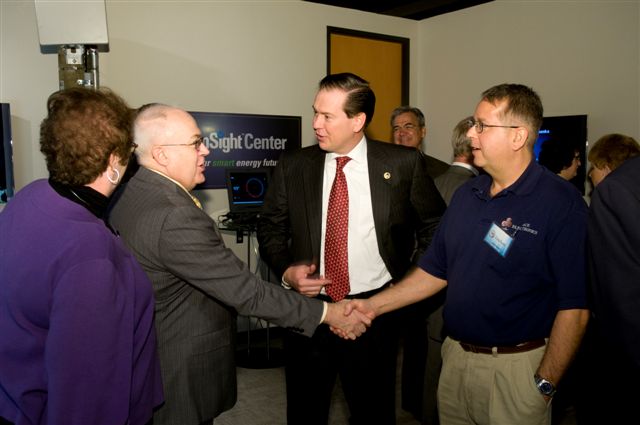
Smart Grid Investment Grant Project Manager Don Macdonald meets million meter customer Craig Funni